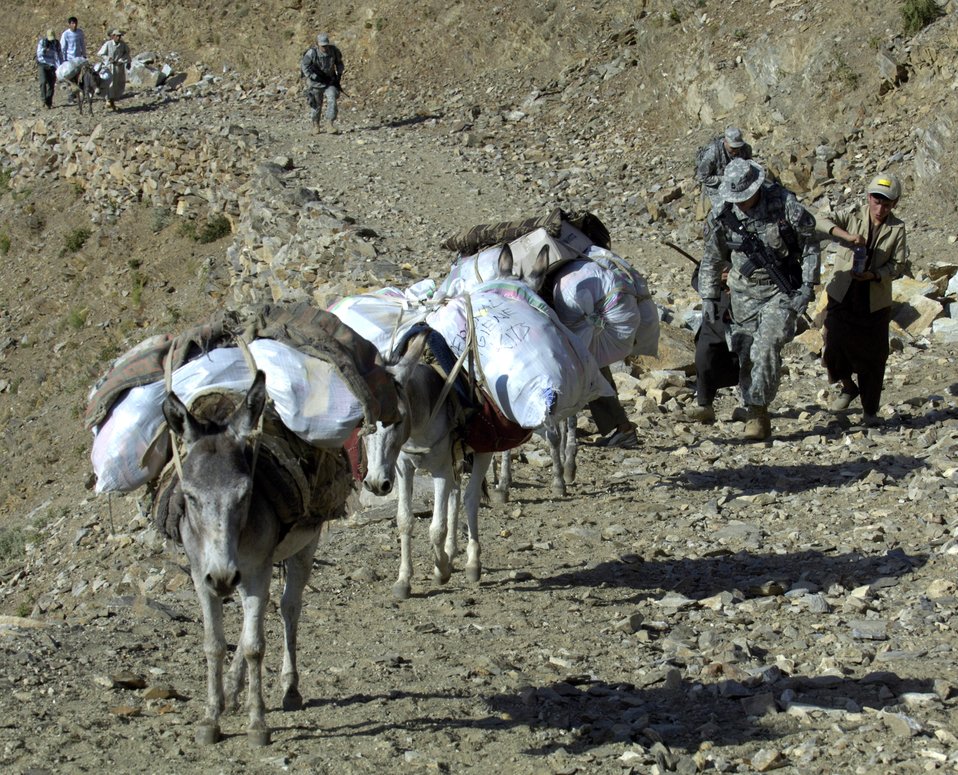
Panjshir PRT

Donkeys loaded with medical supplies and humanitarian aid accompany members of the Panjshir Provincial Reconstruction Team Aug. 7. PRT members made an 11-mile round-trip trek over a mountain pass and into a river valley to provide medical care to Afghans living in Roydara village in the Shutol district of Panjshir province, Afghanistan. The Panjshir PRT stood up in 2005 and is directed by Ben Lowenthal from the U.S. State Department. Housed at Forward Operating Base Lion in the Hindu Kush mountains, the 40-member team interfaces with a population of approximately 300,000 Afghans spread across 1,393 square miles in six provinces.